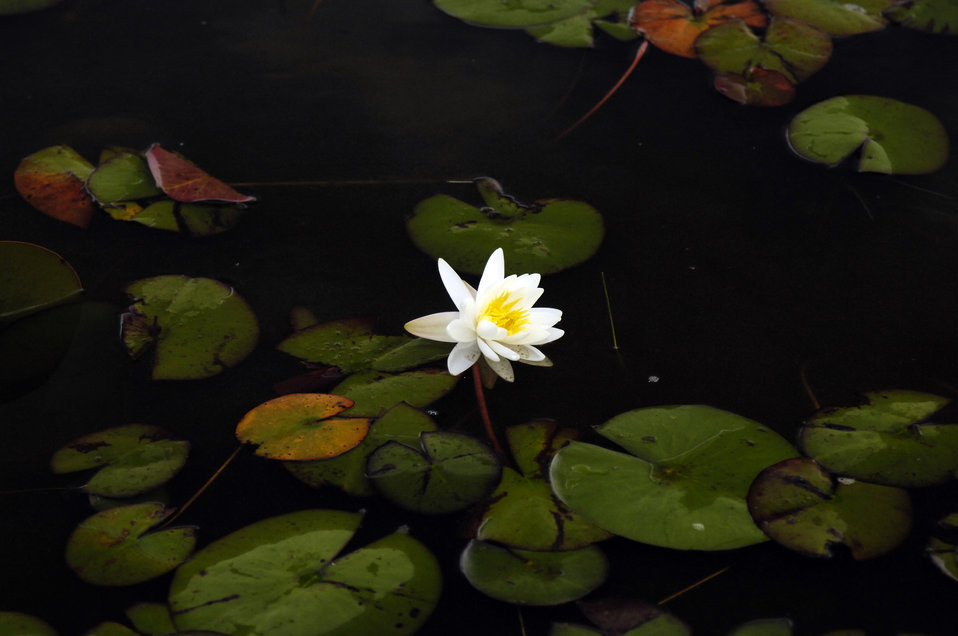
A Fragrant White Water-lily (Nymphaea odorata) grows in the Everglades National Park in Florida on April 5, 2010. The Fragrant Water Lily is an aquatic plant and can be found in shallow lakes, ponds, and permanent slow moving waters.